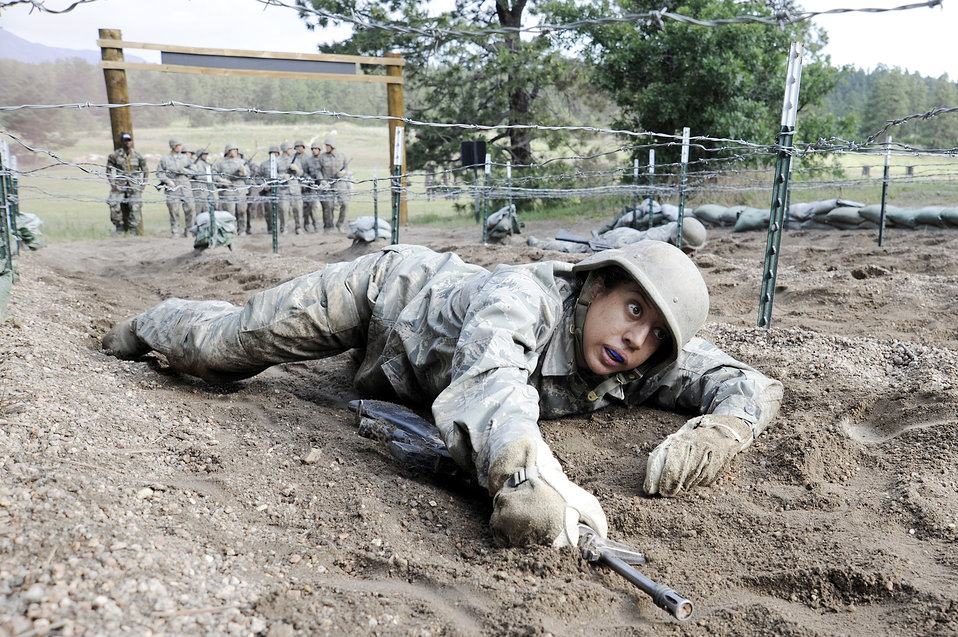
Academy basic field training at Jacks Valley

U.S. Air Force Academy Basic Cadet Tara Harris performs a low crawl on the Jacks Valley Assault Course July 21 near Colorado Springs, Colo. The field training portion of basic training started July 13.